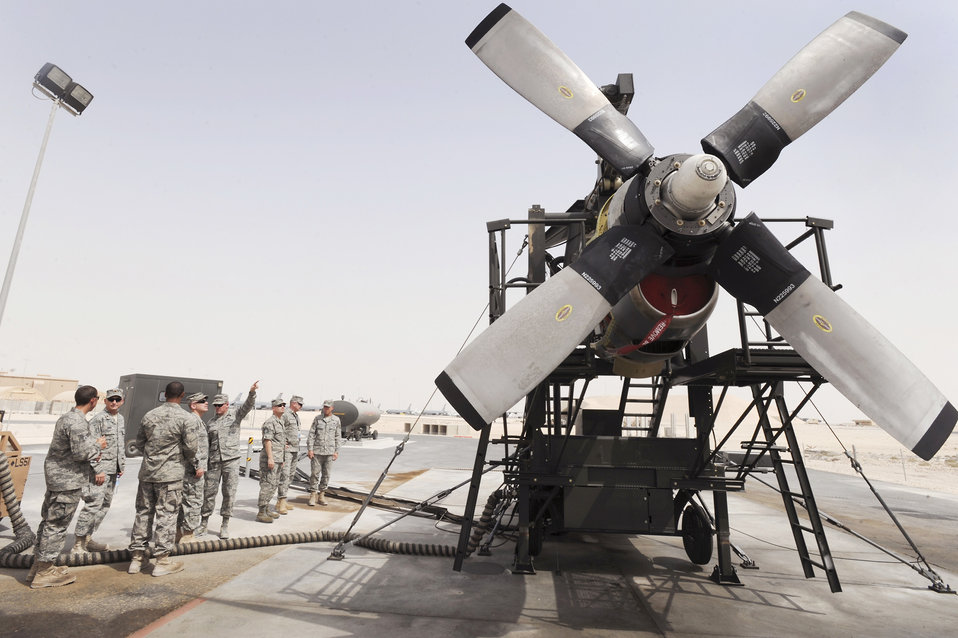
New test cell

Senior maintainers from the 379th Expeditionary Maintenance Group at an air base in Southwest Asia get briefed on the new T56 engine test cell June 14 prior to a demonstration of its capability. This is the only T56 test cell in the U.S. Central Command area of responsibility. The T56 enables maintainers to test engines in the AOR instead of sending them back to Ramstein Air Base, Germany.